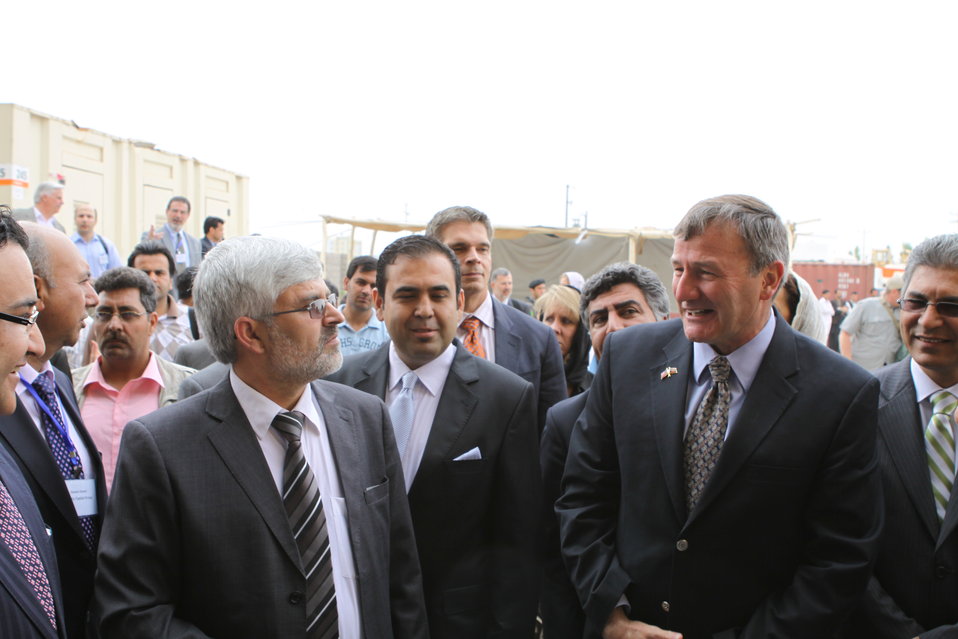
100525 Hirat Marble Conference 057